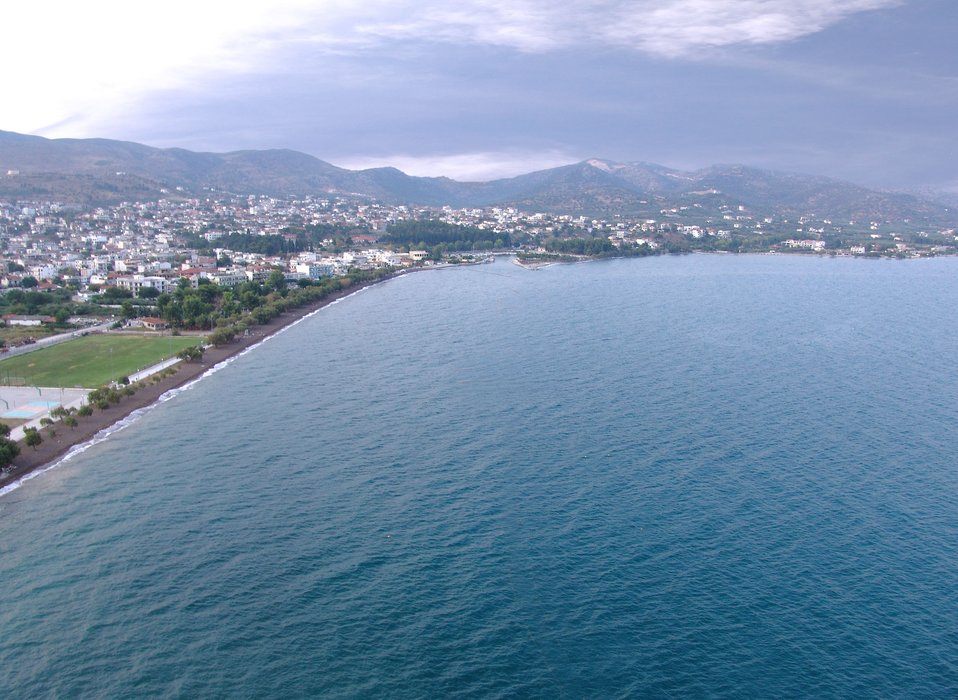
Български: Неа Анхиалос, Гърция. Nea Anchialos, Greece.